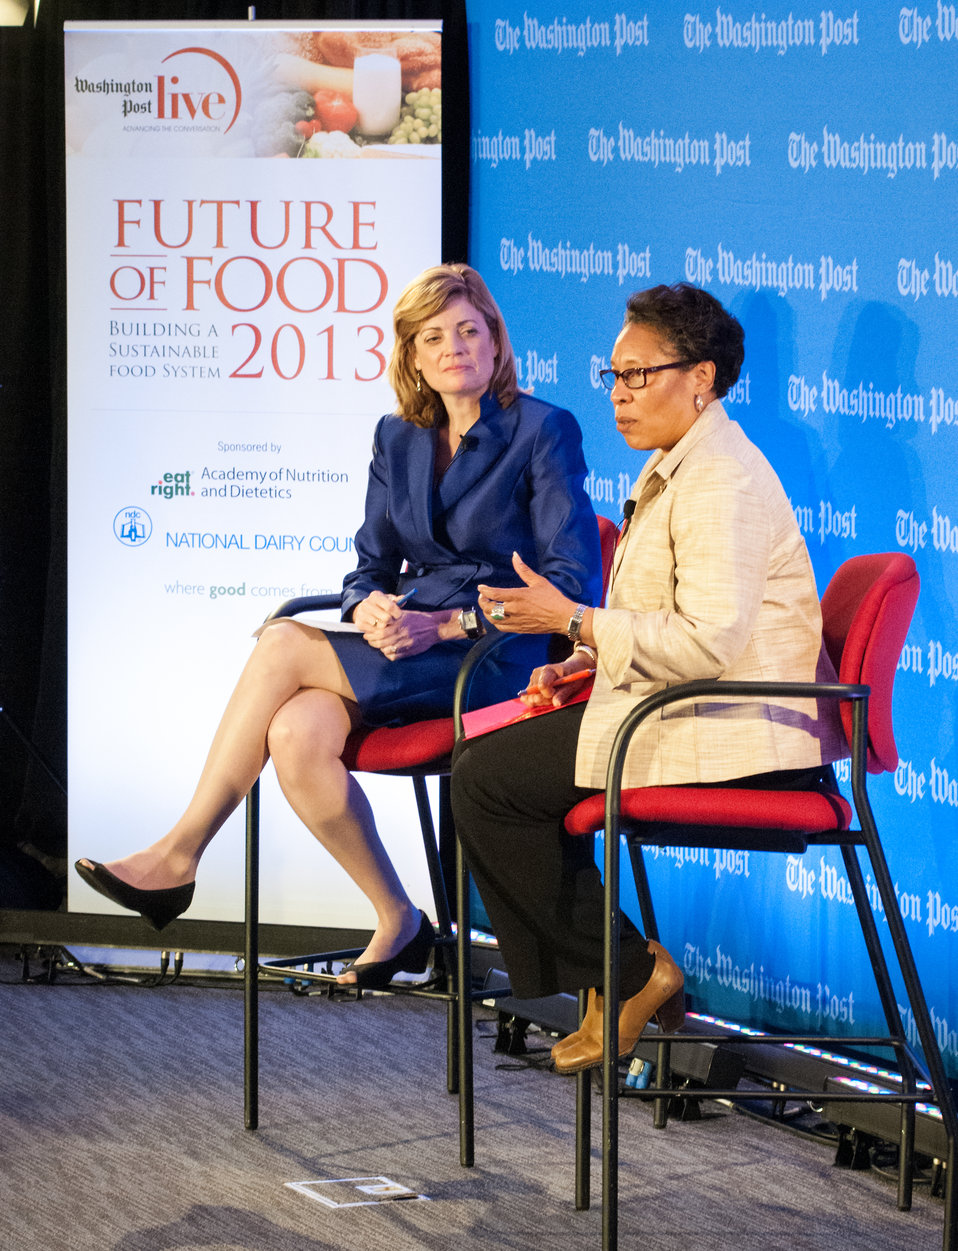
Washington Post Live Editor Mary Jordan and U.S. House of Representatives Committee on Agriculture member Congresswoman and an anti-hunger advocate Marcia Fudge (OH) along with Agriculture Secretary Tom Vilsack and leading agricultural and nutrition experts discuss expanding healthy, sustainable food systems during the annual live forum, “Future of Food: Building a Sustainable Food System 2013,” sponsored by the Washington Post in Washington, D.C. on Wednesday, May 22, 2013. The discussion included public-private partnerships, the market’s role in nutrition and the future of agricultural innovation.